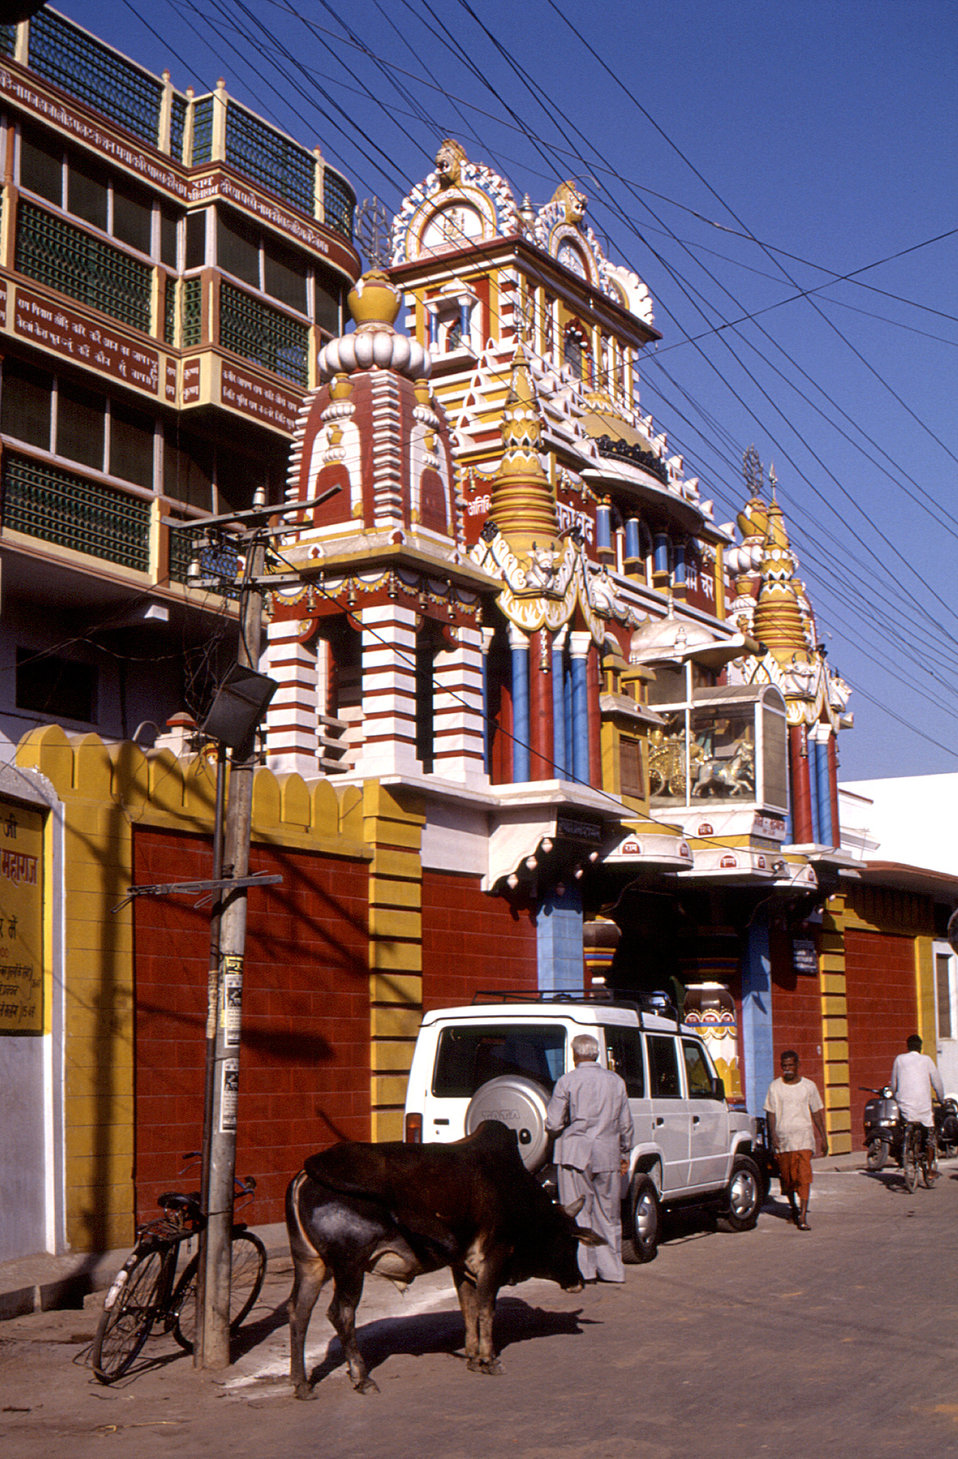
This 2000 image was captured just outside the architecturally ornate offices of the Geeta Press in Gorakhpur, India. The Geeta Press is a well-known publisher of Hindu religious materials, including many Hindu books, which had been translated into English. There was a wonderful museum that was located upstairs, which depicted the story of the Hindu gods.The image was provided by Chris Zahniser, B.S.N., R.N., M.P.H., a STOP team member and photographer, who was assigned to the state of Uttar Pradesh in northern India, and spent three months working in the Districts of Gorakhpur and Deoria.